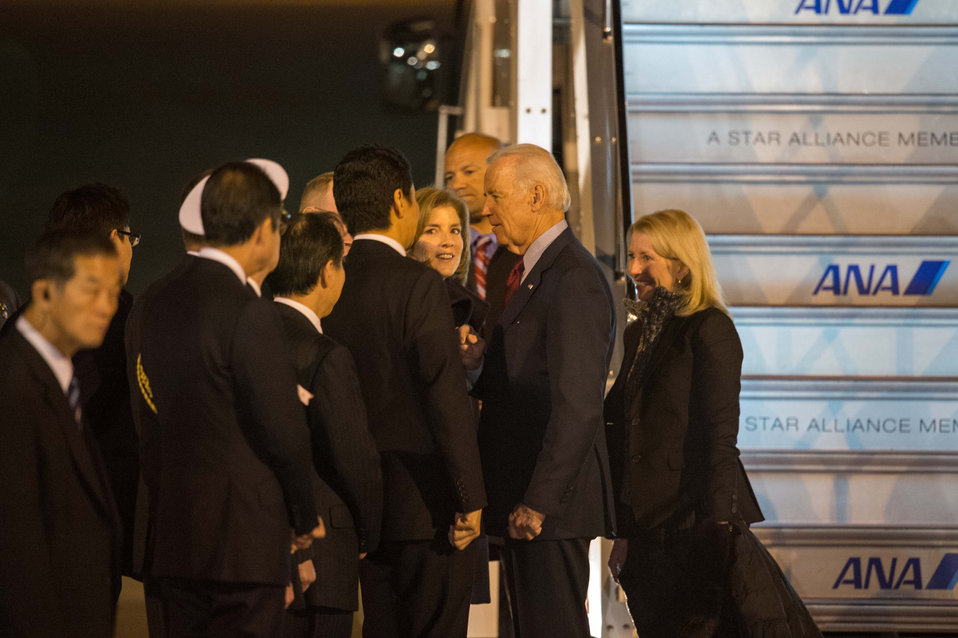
Vice President Biden Arrives in Japan

Vice President Joe Biden, flanked by U.S. Ambassador to Japan Caroline Kennedy and Ambassador-at-Large for Global Women’s Issues Catherine Russell, is welcomed by greeters upon arrival in Tokyo, Japan, on December 2, 2013.